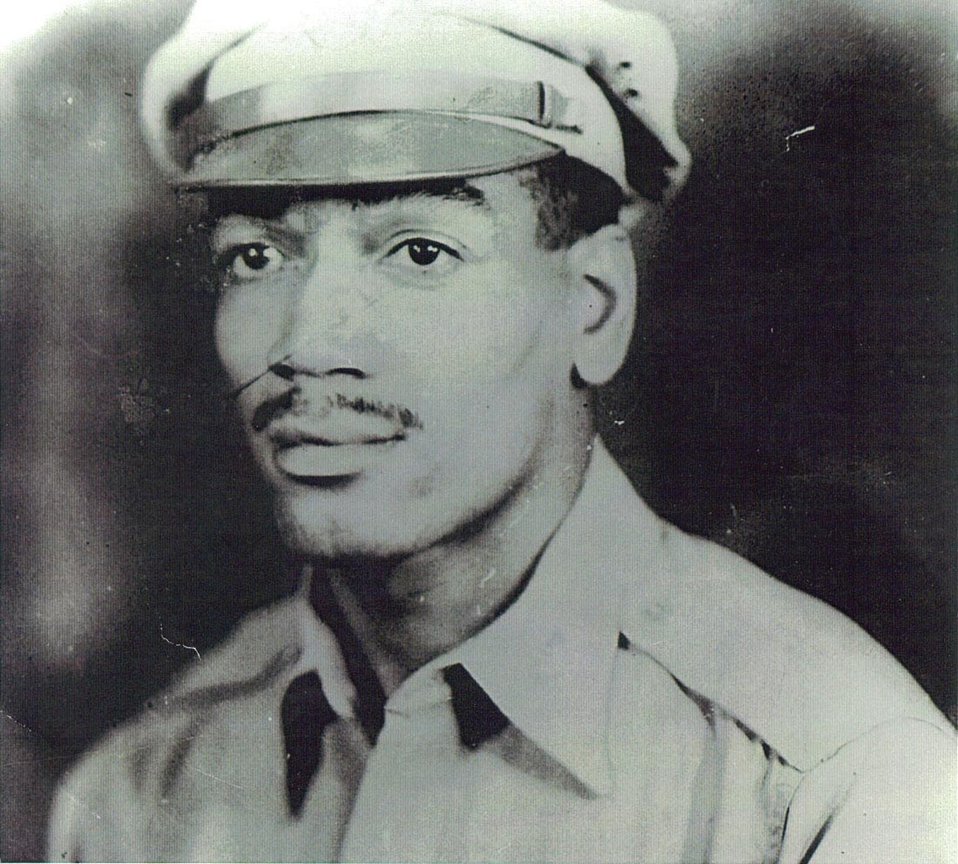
Lee Archer: Tuskegee Airman

Lt.Col. Lee Archer: Tuskegee Airman. He retired from the Air Force in 1970 and went on to be highly successful in business.